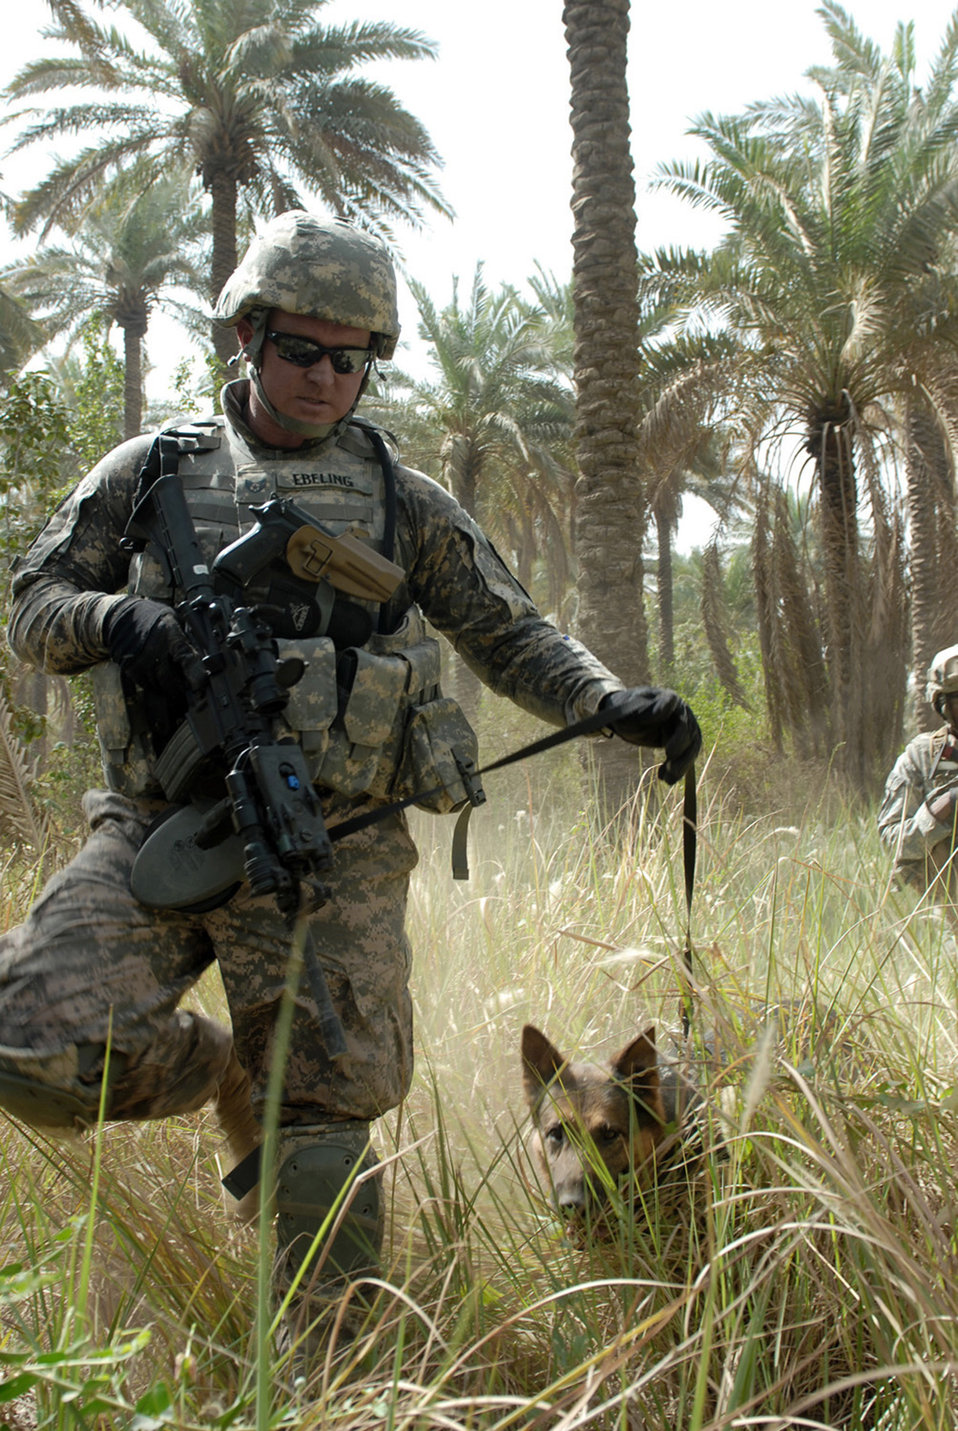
Military working dogs supplement sweep operation

Air Force Staff Sgt. Christopher Ebeling, a military working dog handler assigned to the provost marshall's office at Camp Victory in Baghdad, and his German Shepherd, Nero, lead a group of Soldiers from the North Carolina National Guard's Company A, 252nd Combined Arms Battalion, 30th Heavy Brigade Combat Team, through a thick palm grove June 13 in nearby Doura searching for weapons or explosives. Sergeant Ebeling, from the 732nd Expeditionary Security Forces Squadron at Ellsworth Air Force Base, S.D., is on his third tour in Southwest Asia and has been in the military for 12 years.